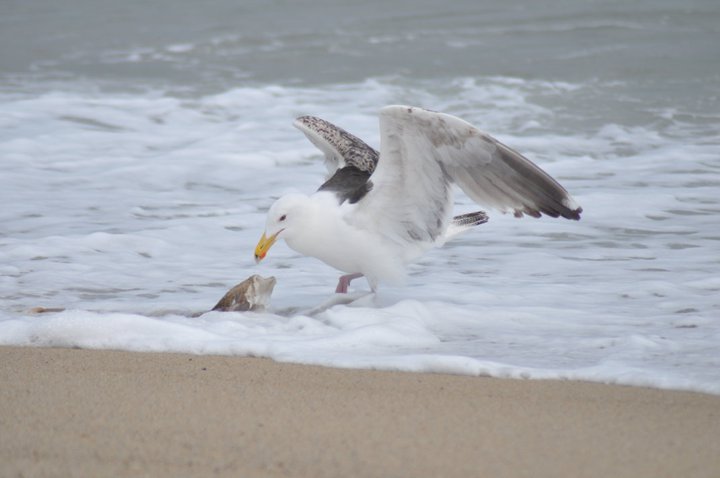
Great Black-Backed Gull Eating Flounder

A great black-backed gull eating a flounder that it caught at the Nantucket National Wildlife Refuge, MA.